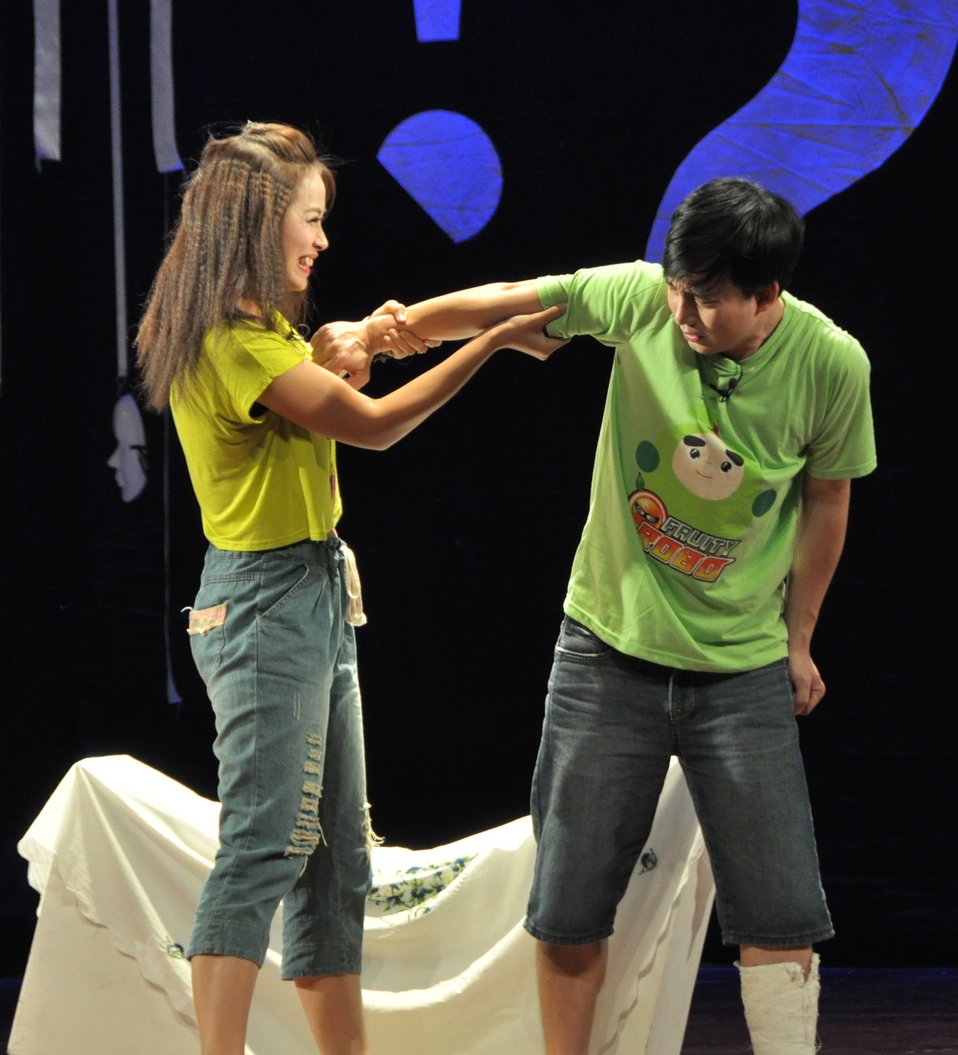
PEPFAR Musical Questions and Exclamations

Hanoi, May 17, 2013